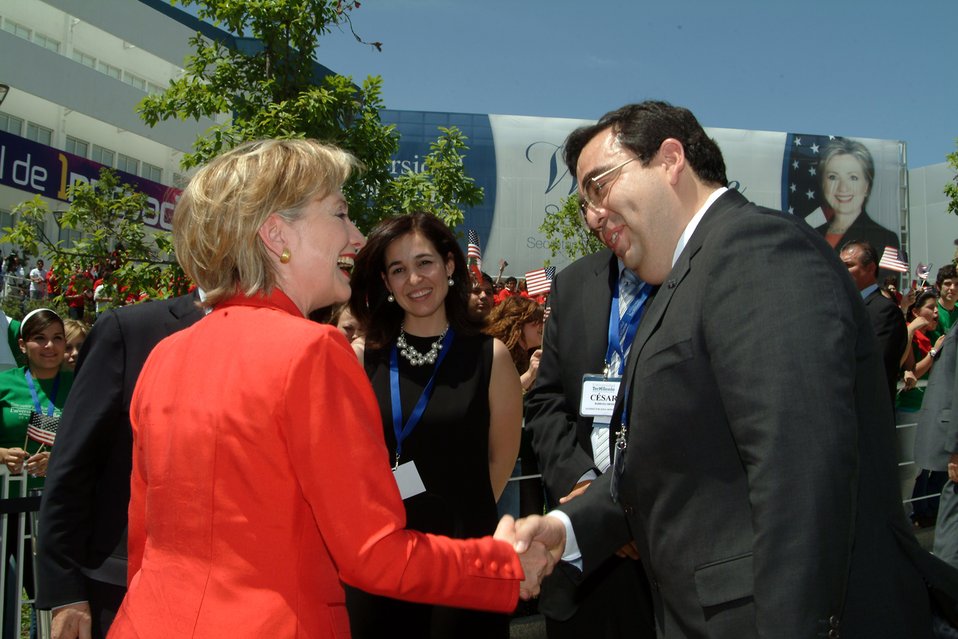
Secretary Clinton at TecMilenio University

U.S. Secretary of State Hillary Rodham Clinton is greeted at TecMilenio University campus by Esperanza Garza, Director of TecMilenio Campus Las Torres, Cesar Barraza, Vice President and Vicerrector of TecMilenio Monterrey Campuses, Alejandro Cristerna, President Rector of TecMilenio System in Monterrey, Mexico March 26, 2009.